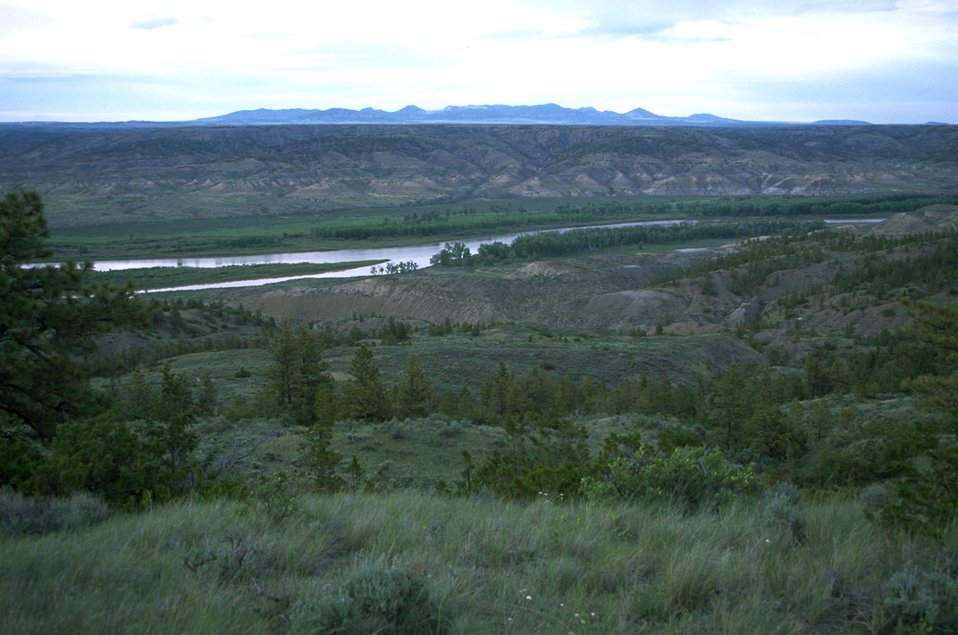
Missouri Breaks area, looking toward the Missouri River and Little Rocky Mountains